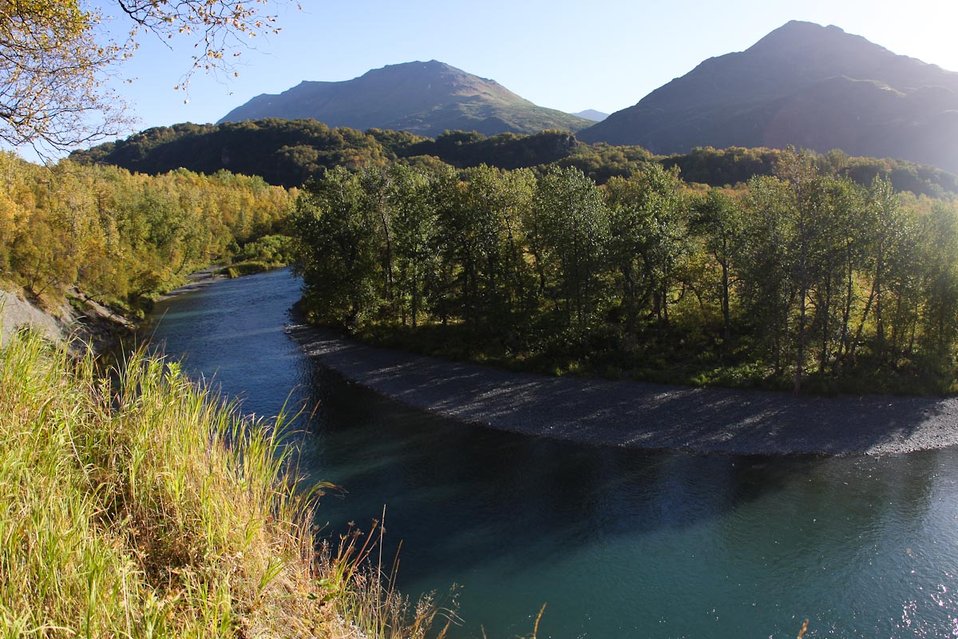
Oxbow on the Uganik R.

Lisa Hupp/USFWS
Source: Kodiak NWR